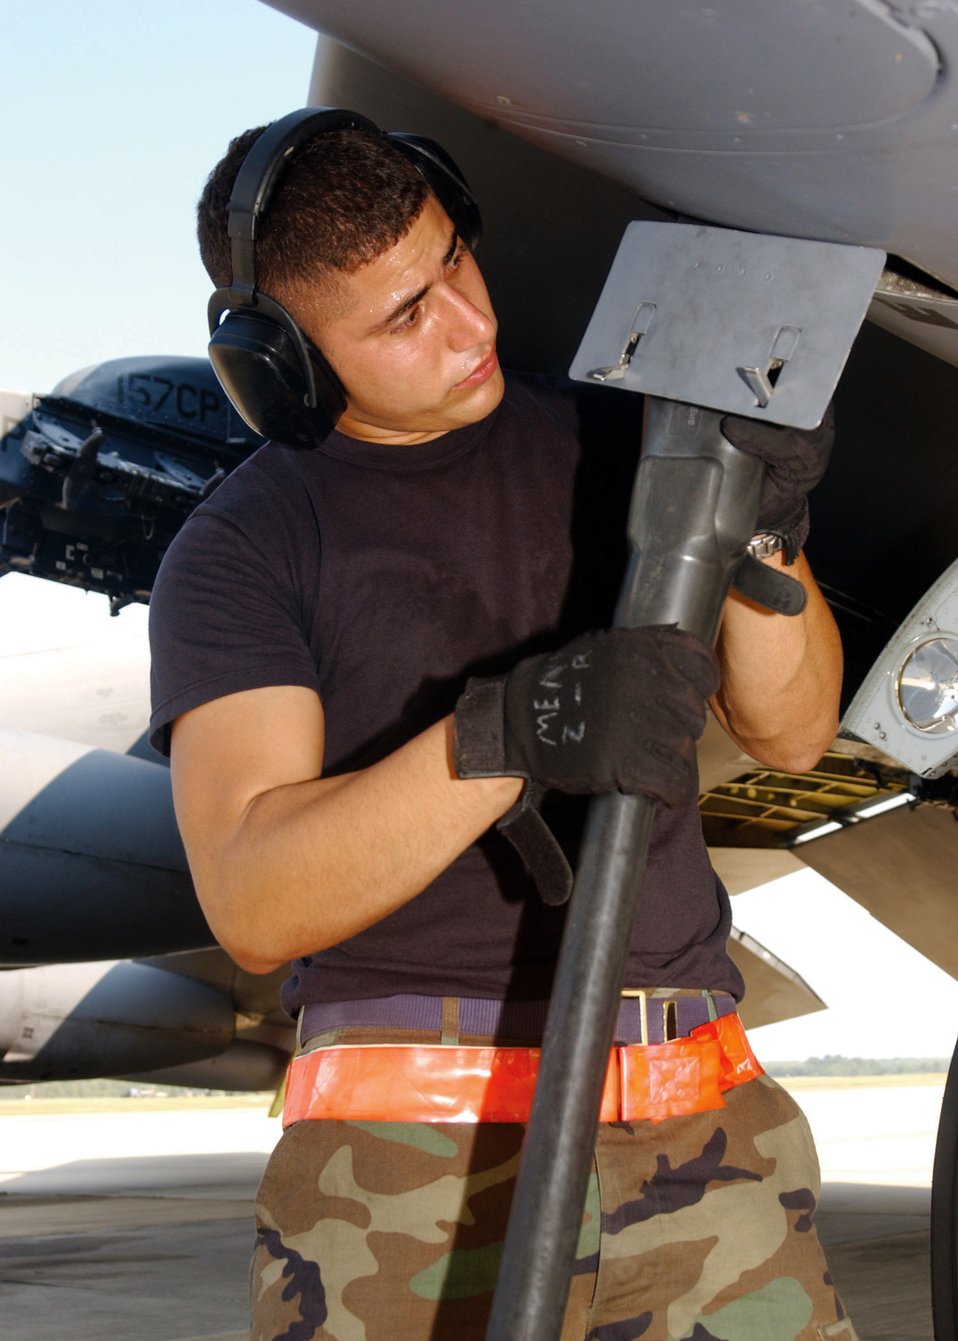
Bomber support

BARKSDALE AIR FORCE BASE, La. -- Airman 1st Class Francisco Mendez connects an external power cable to a B-52 Stratofortress bomber. The bombers provided close air support during an exercise at Fort Polk, La. The Airman is with the 20th Aircraft Maintenance Squadron here.